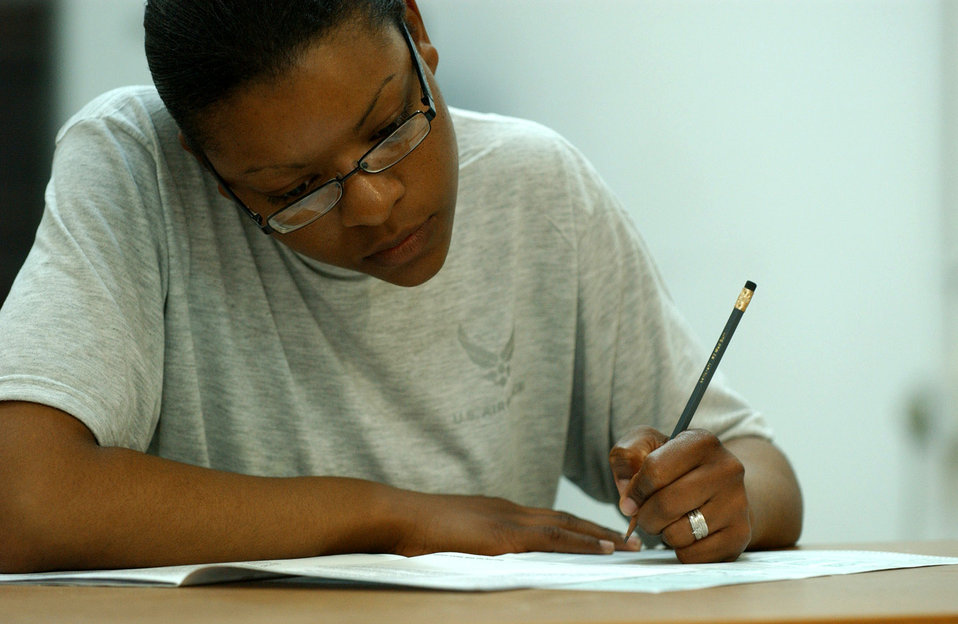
Education opportunities open doors for deployed members

Senior Airman Jaquetta Bice concentrates while taking a College Level Entrance Exam Program test Jan. 3 at Ali Base, Iraq. The 407th Expeditionary Services Squadron Education Center gives servicemembers the opportunity to further their education and career development. Airman Bice is assigned to the 407th Expeditionary Security Forces Squadron and is deployed from Seymour Johnson Air Force Base, N.C.